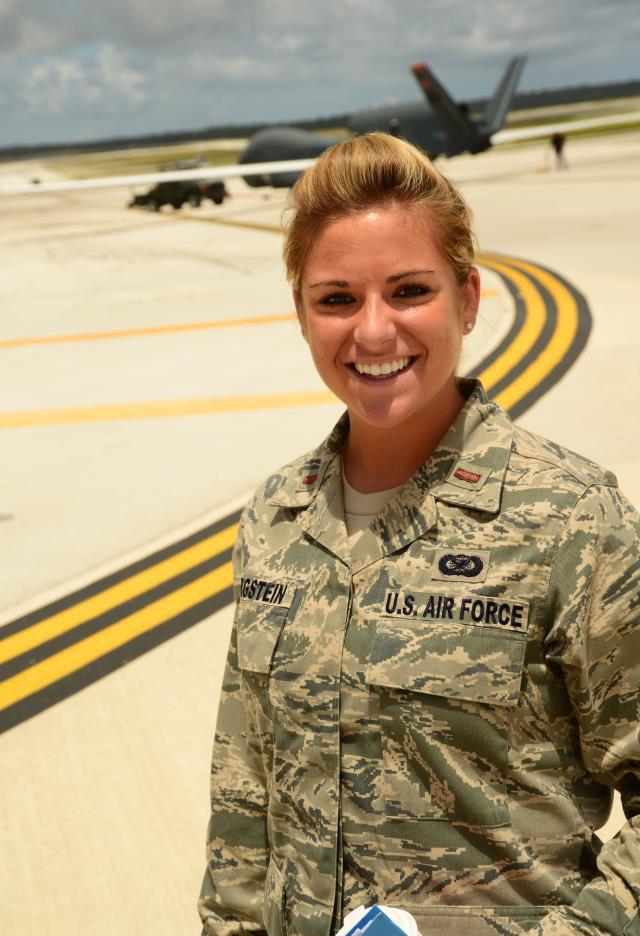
Through Airmen's Eyes: Pacific Unity

Second Lieutenant Sarah Bergstein was recently a part of Pacific Unity 12-6 in the Phillipines. From Aug. 20 to Sept. 20, members of the 647th Civil Engineer Squadron, out of Joint Base Pearl Harbor-Hickam, Hawaii, partnered with members of the 355th Aviation Engineering Wing from Basa, Philippines, members of the Philippine Army Security Forces and local contractors to renovate seven classrooms and build one schoolhouse from the ground up.